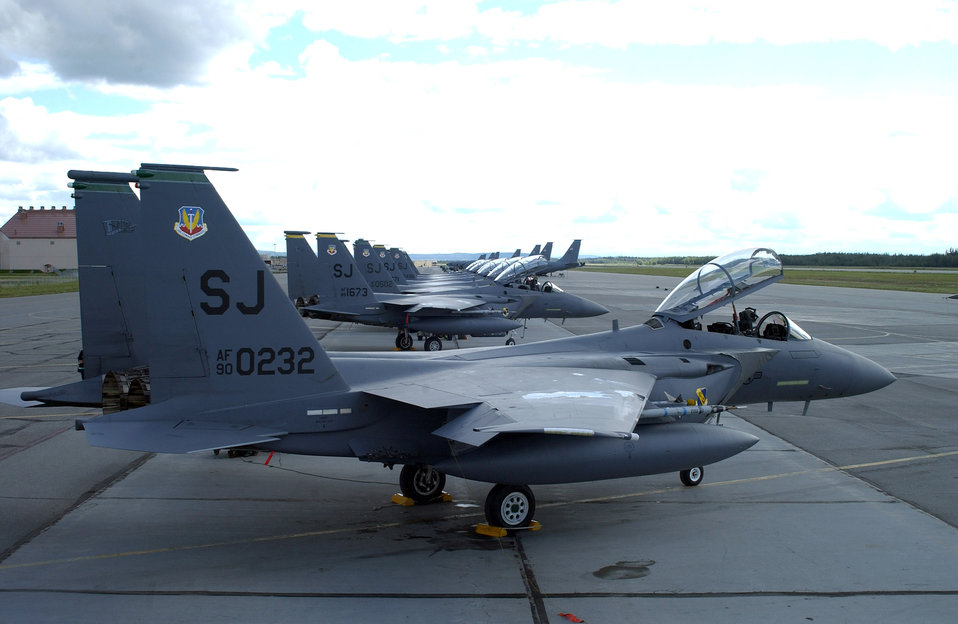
Eagles, Falcons wave a Red Flag

Col. Daniel DeBree leads a team of F-15E Strike Eagles July 19 during a Red Flag-Alaska mission at Eielson Air Force Base, Alaska. More than 80 aircraft and 1,500 servicemembers from six countries are participating in the exercise July 12 to 27 to sharpen their combat skills in simulated combat sorties. Red Flag-Alaska's multinational participation and the addition of the Pacific Alaskan Range Complex assets provide realistic combat training in a safe and controlled setting. Colonel DeBree is vice commander of the 4th Fighter Wing at Seymour Johnson AFB, N.C.